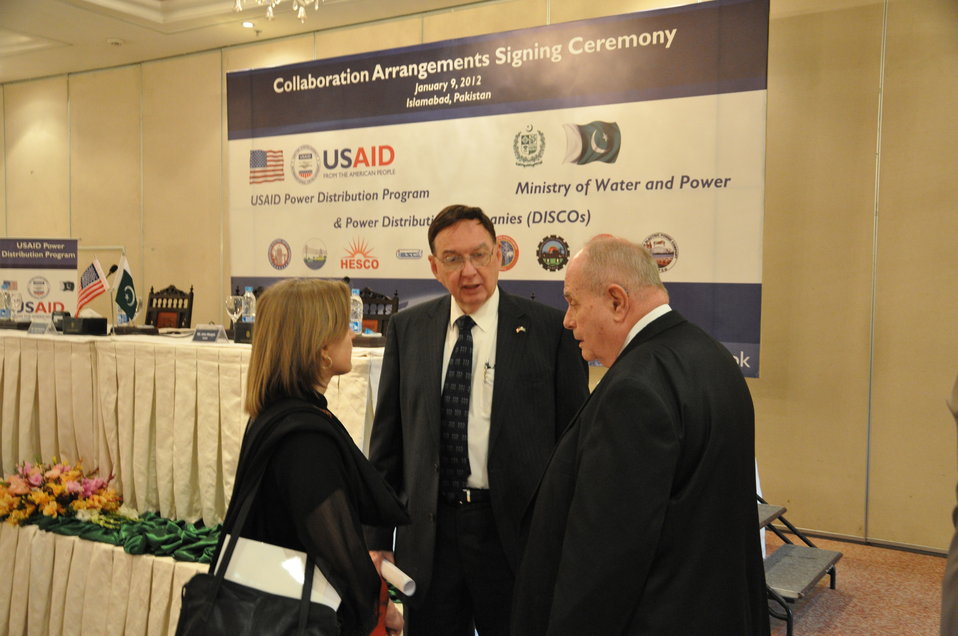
Collaboration Arrangements Signing Ceremony